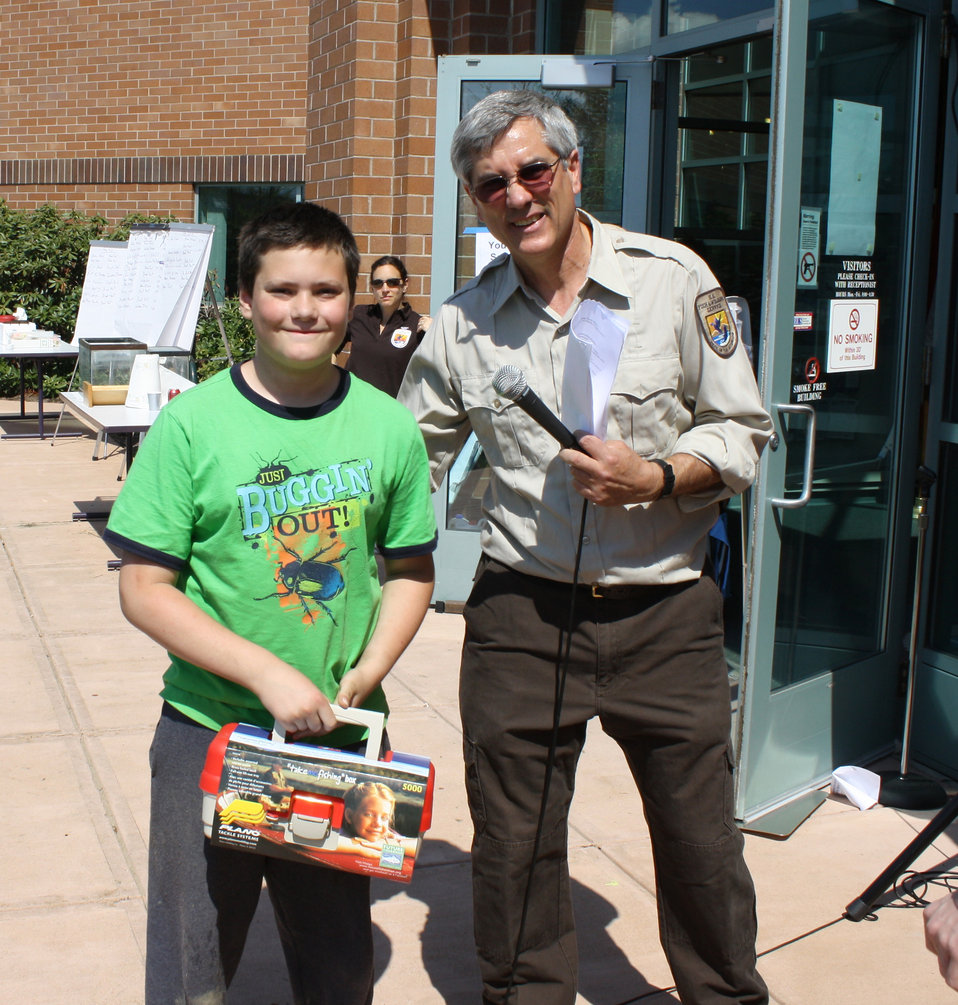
2nd Prize eldest!

A winner at the USFWS fishing derby in Hadley, MA on May 7th.